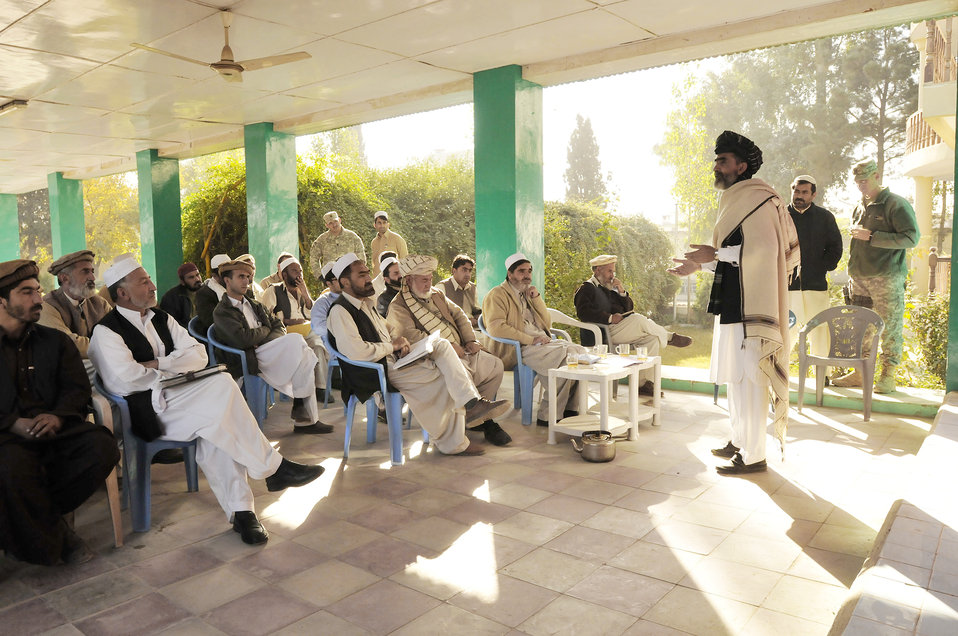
American engineers conduct quality assurance training in Afghanistan

Local leaders, engineers, construction contractors and foremen listen as Hamid Shah speaks during a monthly contractor training session held at the Civil Military Operations Center in Khost province, Afghanistan, Nov. 14, 2009. Engineers from the Khost Provincial Reconstruction Team provided construction quality assurance training to locals in order to facilitate high quality construction practices in the region. Mr. Shah is the director of economics for Khost province.